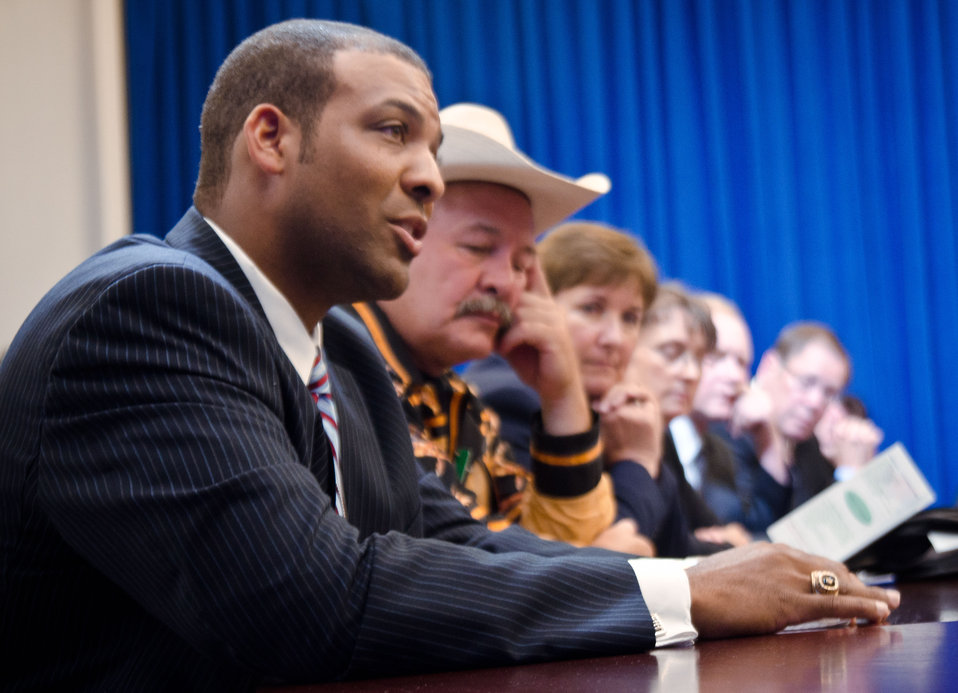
Philip Johnson Haynie, III (left), Haynie Farms, Chesapeake Bay, VA, attended a meeting at the White House, in Washington, DC, on July 6, 2011. He was asked to participate along with President Barack Obama, Agriculture Secretary Tom Vilsack, the President's Domestic Policy Adviser Melody Barnes and rural communities leaders from across the country for the White House Rural Champions of Change event to strengthen rural communities and promote economic growth. P.J. Haynie serves on USDA's Plant Variety Protection Act Board and on the Agricultural Advisory Council for Virginia's first congressional district. He is a graduate of Virginia Tech University and currently serves on the College of Agriculture and Life Sciences Advisory Committee for both Virginia Tech and Virginia State Universities. Locally, he is a Board member of Chesapeake Academy and a member of Macedonia Baptist Church. He is employed by Haynie Farms, a diverse row-crop farm in the Chesapeake Bay region of VA, where he farms more than 3,000 acres of primarily corn, wheat, and soybeans. P.J., is also a member of the National Black Growers Council, a coalition of African American commodity growers who advocate for the 21st century policy needs of Black growers and the future of Black growers.